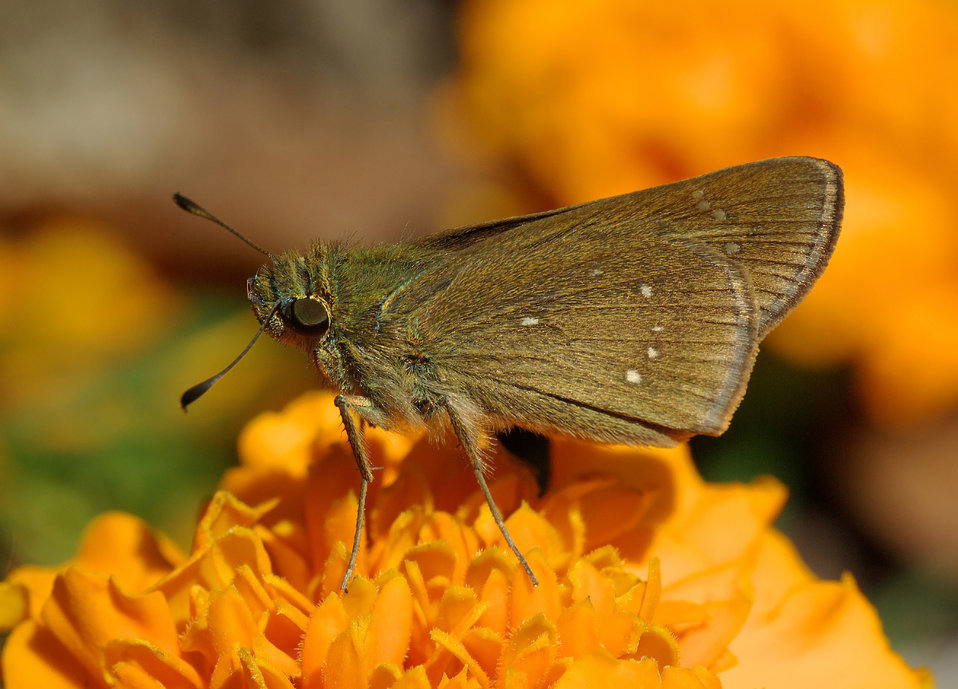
Name Pelopidas mathias Family Hesperiidae Dark Small-branded Swift. 日本語: チャバネセセリ 中文: 隐纹谷弄蝶
Location: Osaka, Japan
Camera Details:
Camera: PENTAX K10D
Lens: TAMRON SP AF90mm F/2.8 Di (Model272E)